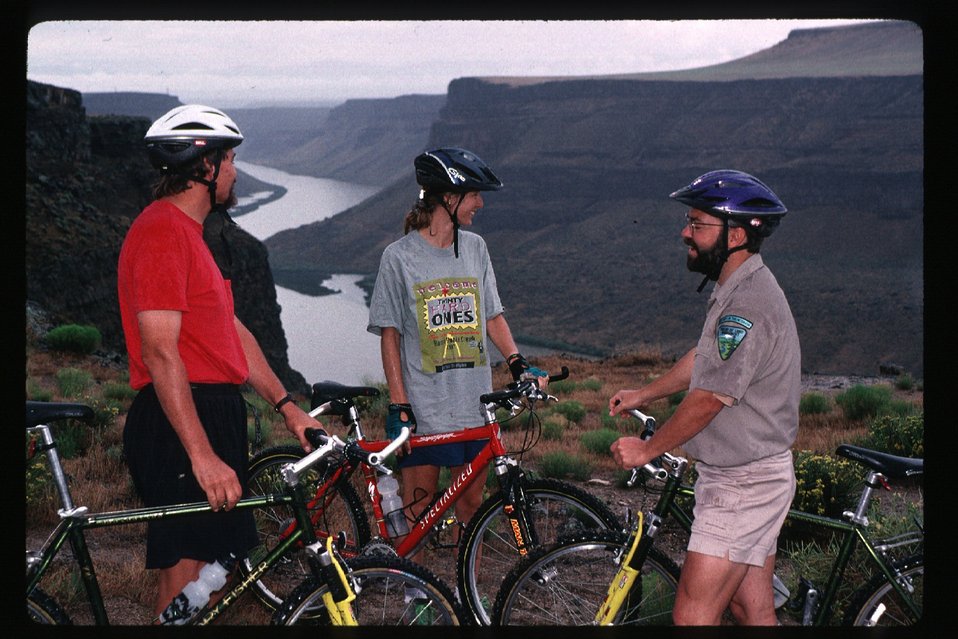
Bikers on Boise Foothills Boise Front bicyclists Four Rivers Field Office LSRD Lower Snake River District